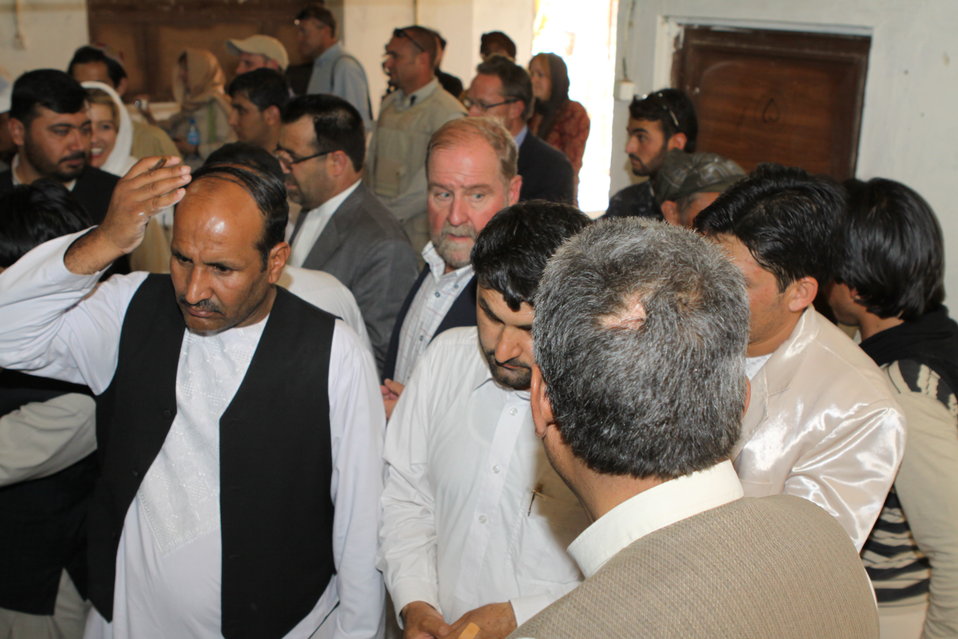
Bolan Poultry Farm